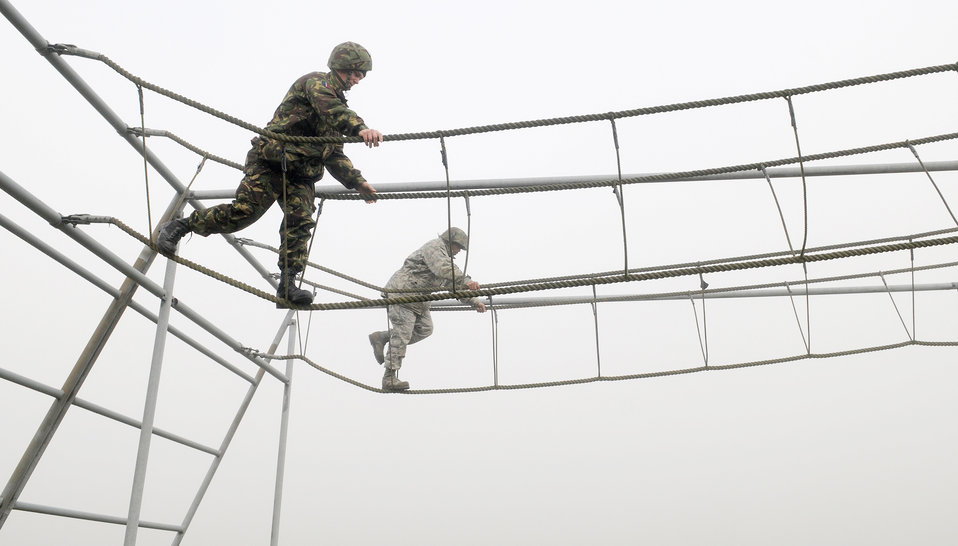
Walk this way...

A British airman (left) and 1st Lt. Xzavior Hill, 100th Civil Engineer Squadron, traverse a rope bridge as part of the Ultimate Challenge 2 activity of Leadership, Ethos and Air Power Day at Royal Air Force Marham, England, Nov. 9, 2009. About 40 Airmen from RAFs Mildenhall and Lakenheath participated in the leadership building opportunities with their British counterparts.